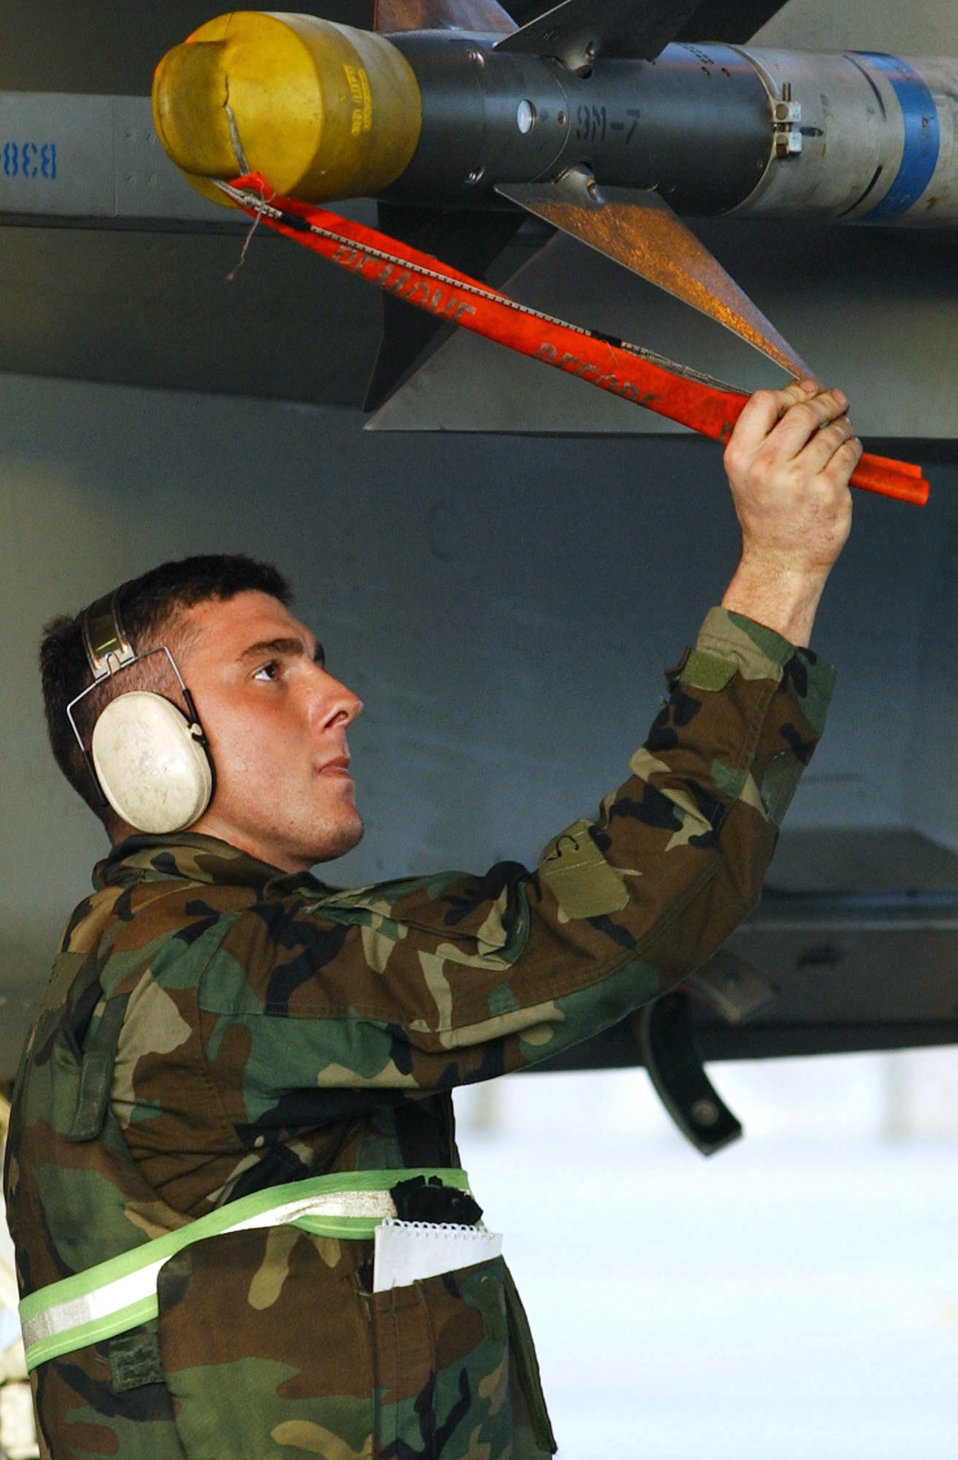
Quick inspection

KADENA AIR BASE, Japan -- Airman 1st Class Travis Gamble performs a quick turn inspection on an aircraft here recently. Airman Gamble is assigned to the 44th Aircraft Maintenance Unit.